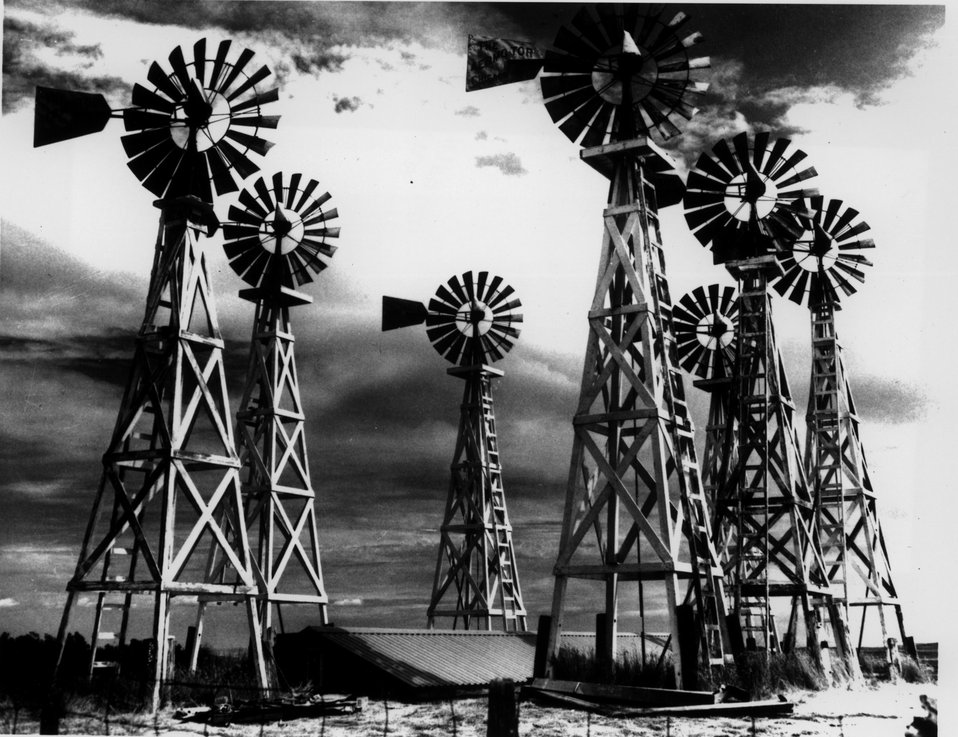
A rapidly vanishing sight is still seen and providing a necessary function on the 'Watson' ranch located near Scottsbluff, Nebraska. c. 1980